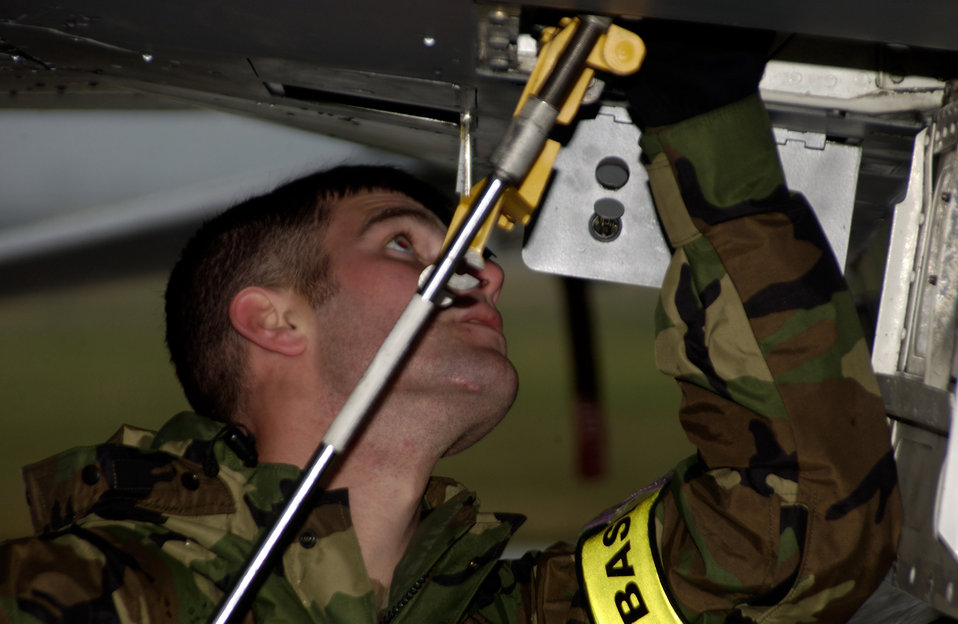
Loading ammo

FORT SMITH, Ark. -- A weapons technician prepares to load ammunition on his F-16C during an Operational Readiness Exercise at the 188th Fighter Wing, Arkansas Air National Guard here recently.